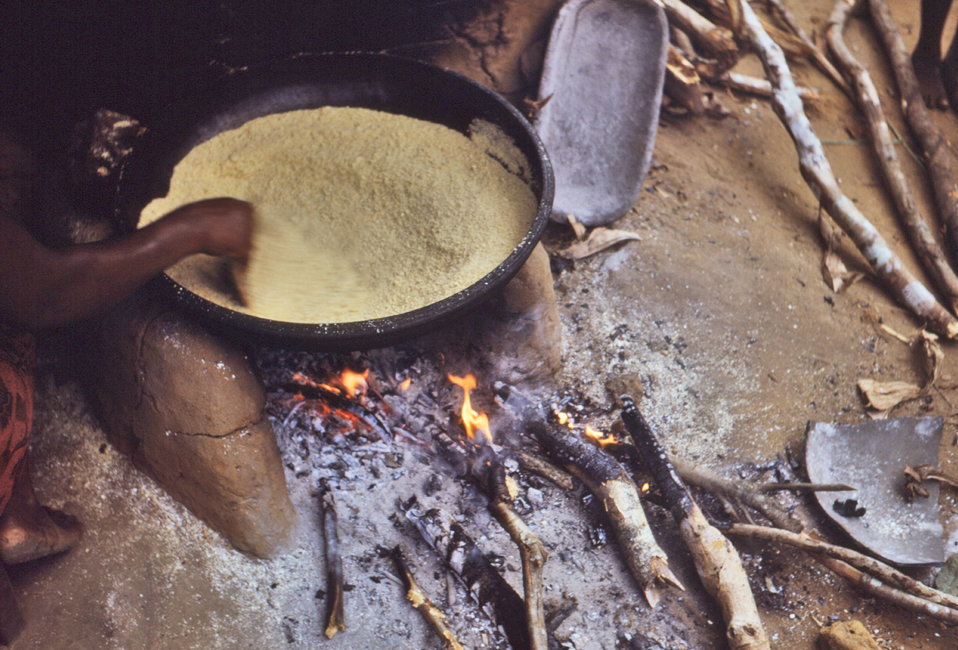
This photograph showed corn soya milk (CSM) that was being cooked into a bread-like food. CSM was a highly prized, protein enriched food distributed primarily to the numerous kwashiorkor stricken children during the Nigerian-Biafran war.